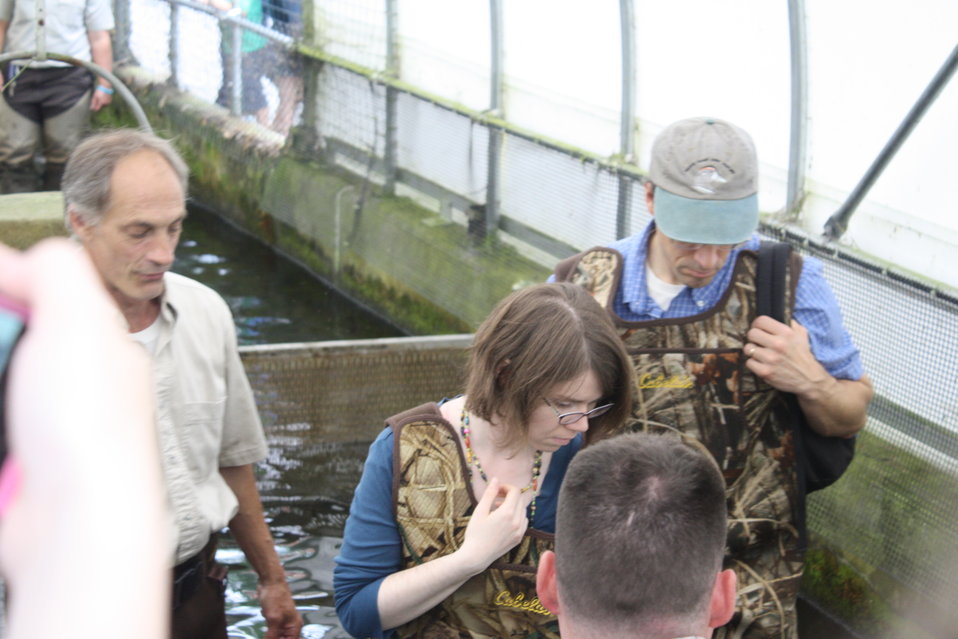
Nashua National Fish Hatchery welcomes regional office employees

Staff in the raceways.